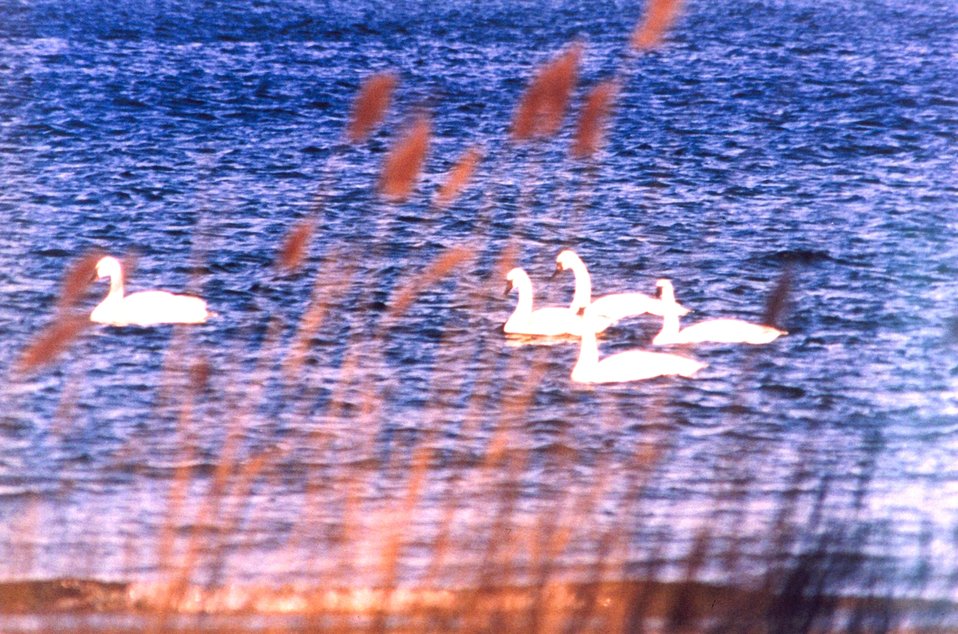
Tundra swans near the mouth of the Patuxent River. These swans can be distinguished from mute swans by their black bills. Tundra swans are native to the Chesapeake Bay region.